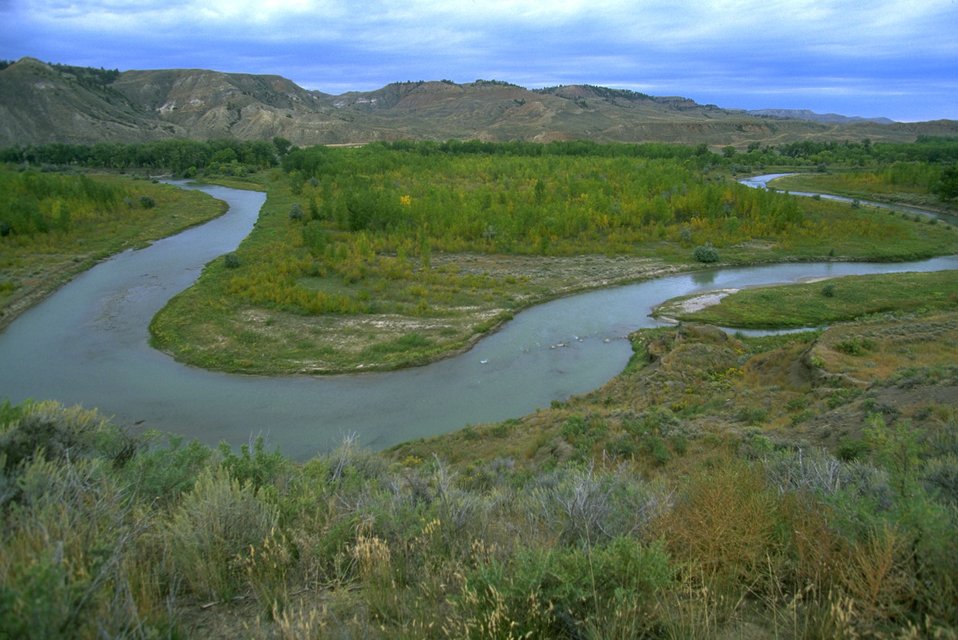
Judith River